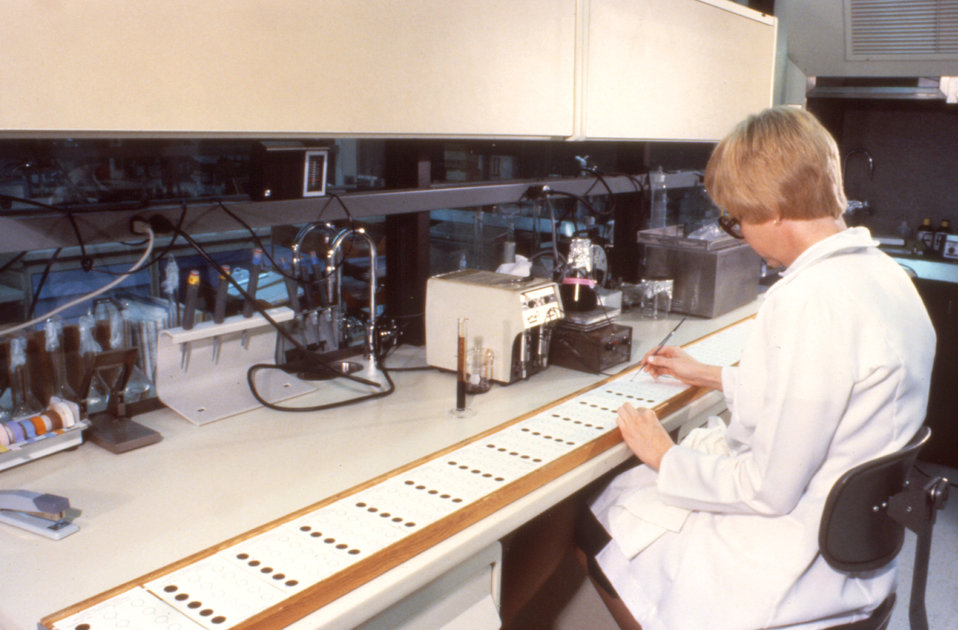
This laboratorian is preparing quality control materials to be used in neonatal hyperthyroid screening.